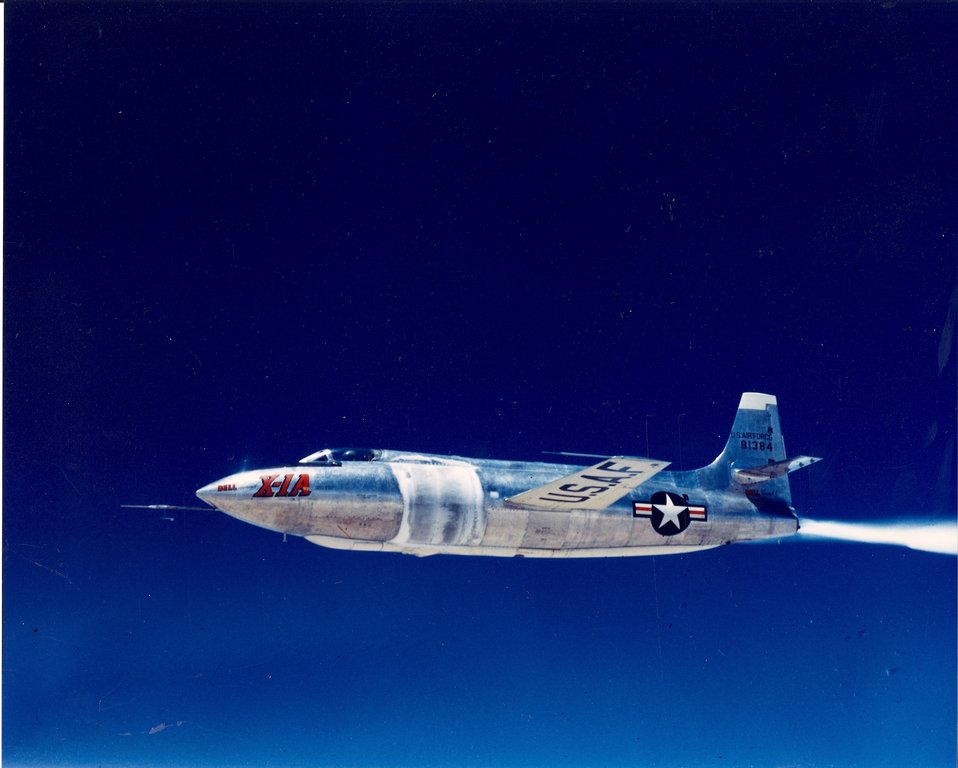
Bell X-1A rocket plane

The Bell X-1A in flight. Maj. Chuck Yeager piloted the rocket plane to a top speed of Mach 2.44 or 1,650 mph Dec. 12, 1953.